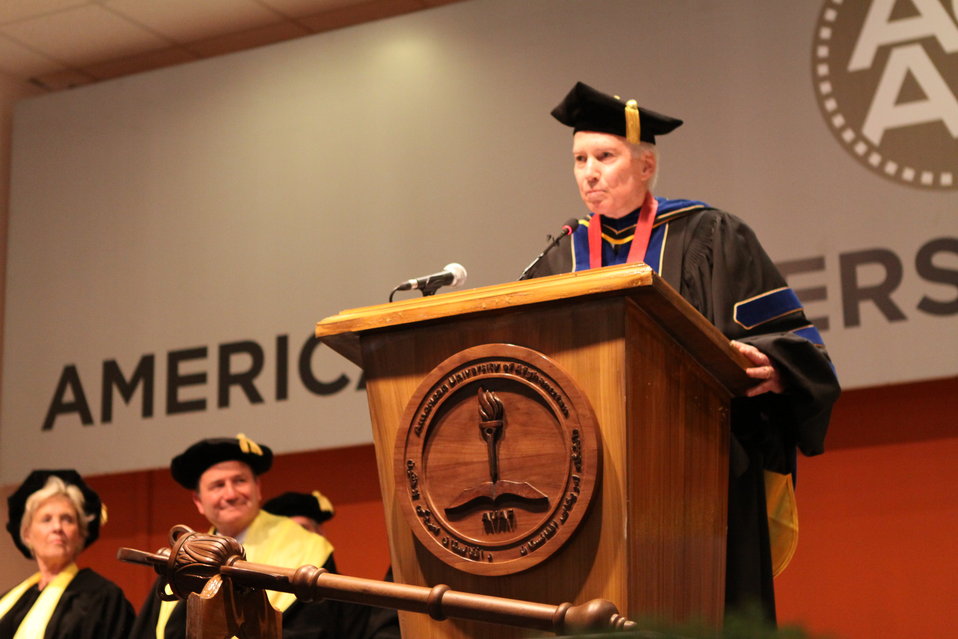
100526 AUAF Graduation 185